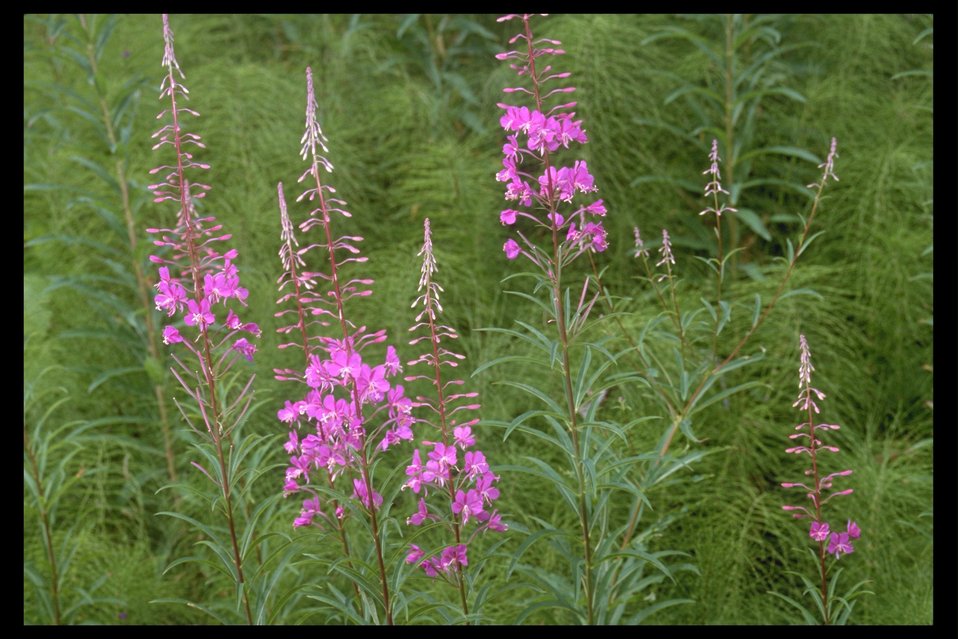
Red Fireweed (Epilobium angustifolium) at Upper Trail Creek.